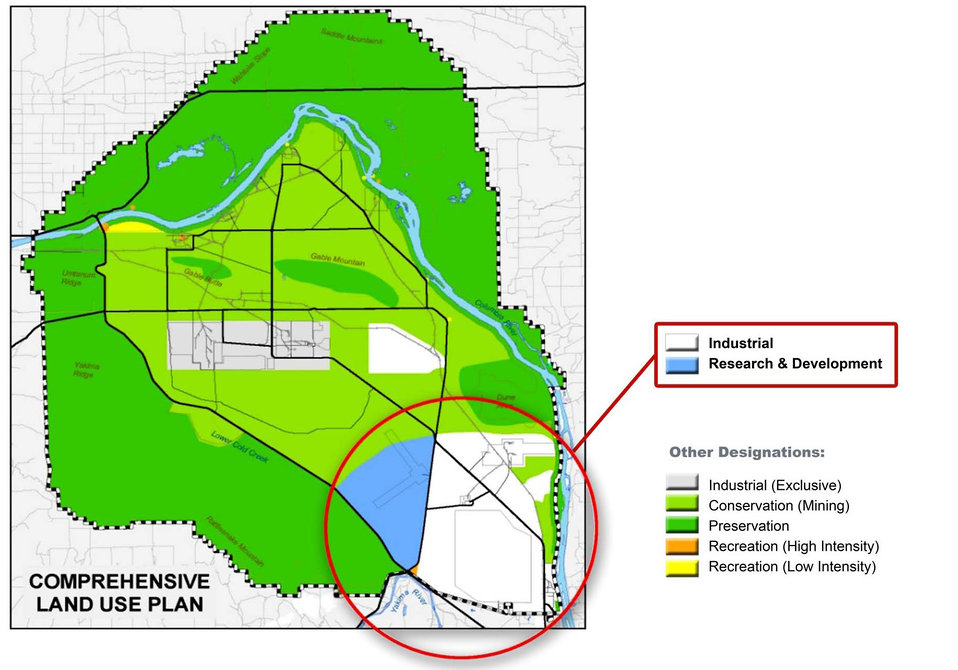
Council Says Hanford Land Holds Economic Development Promise

U.S. Department of Energy officials are considering the transfer of 1,341 acres of land at the Hanford site in Richland, Wash., to the Tri-City Development Council (TRIDEC) for economic development purposes. Members of the council hope the land will attract new business to the area and create jobs.

TRIDEC requested the parcel of land near the southern border of the Hanford site, and just north of Richland, in May. The land, which was used mainly as buffer area for the nuclear reservation during plutonium production years, is not contaminated.